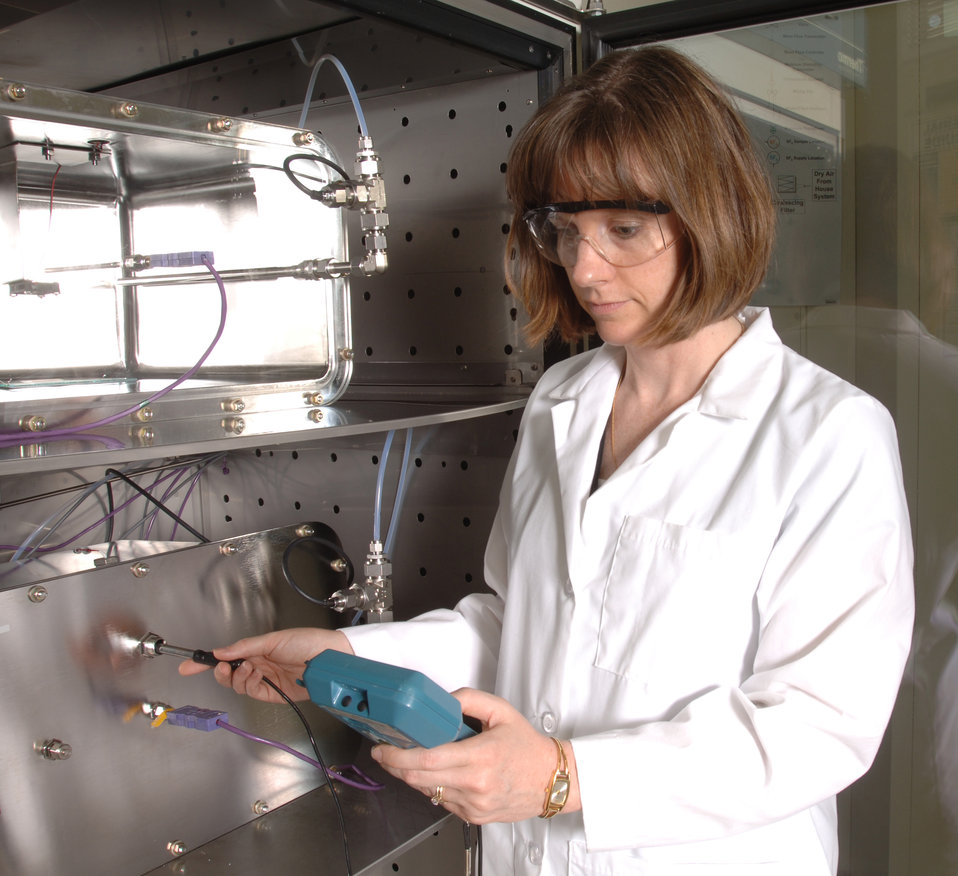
Assessing prototype reference material for testing emissions of VOCs

At NIST's small chamber test facility, researchers are assessing the performance of a prototype reference material for testing emissions of VOCs from building products.